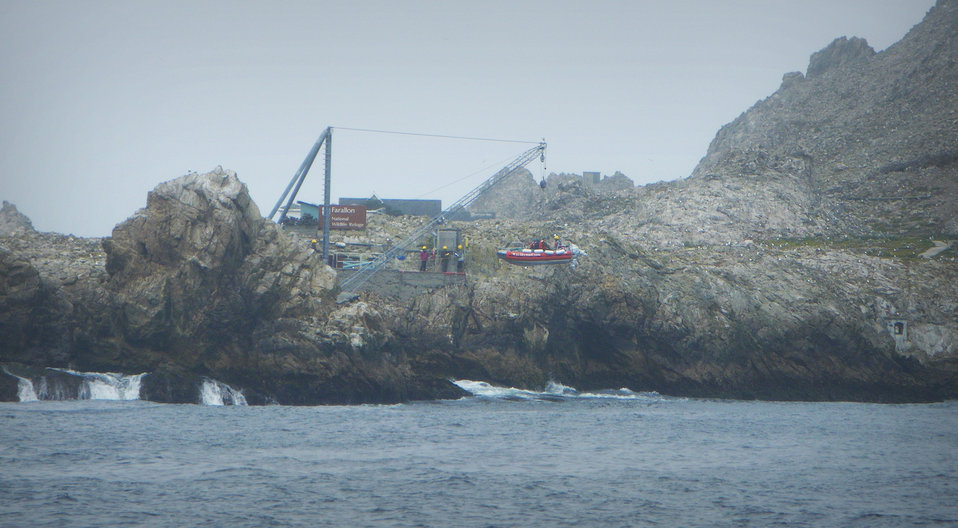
Boat Being Craned Ashore

The only way to disembark on the island is to have a small landing boat craned ashore.